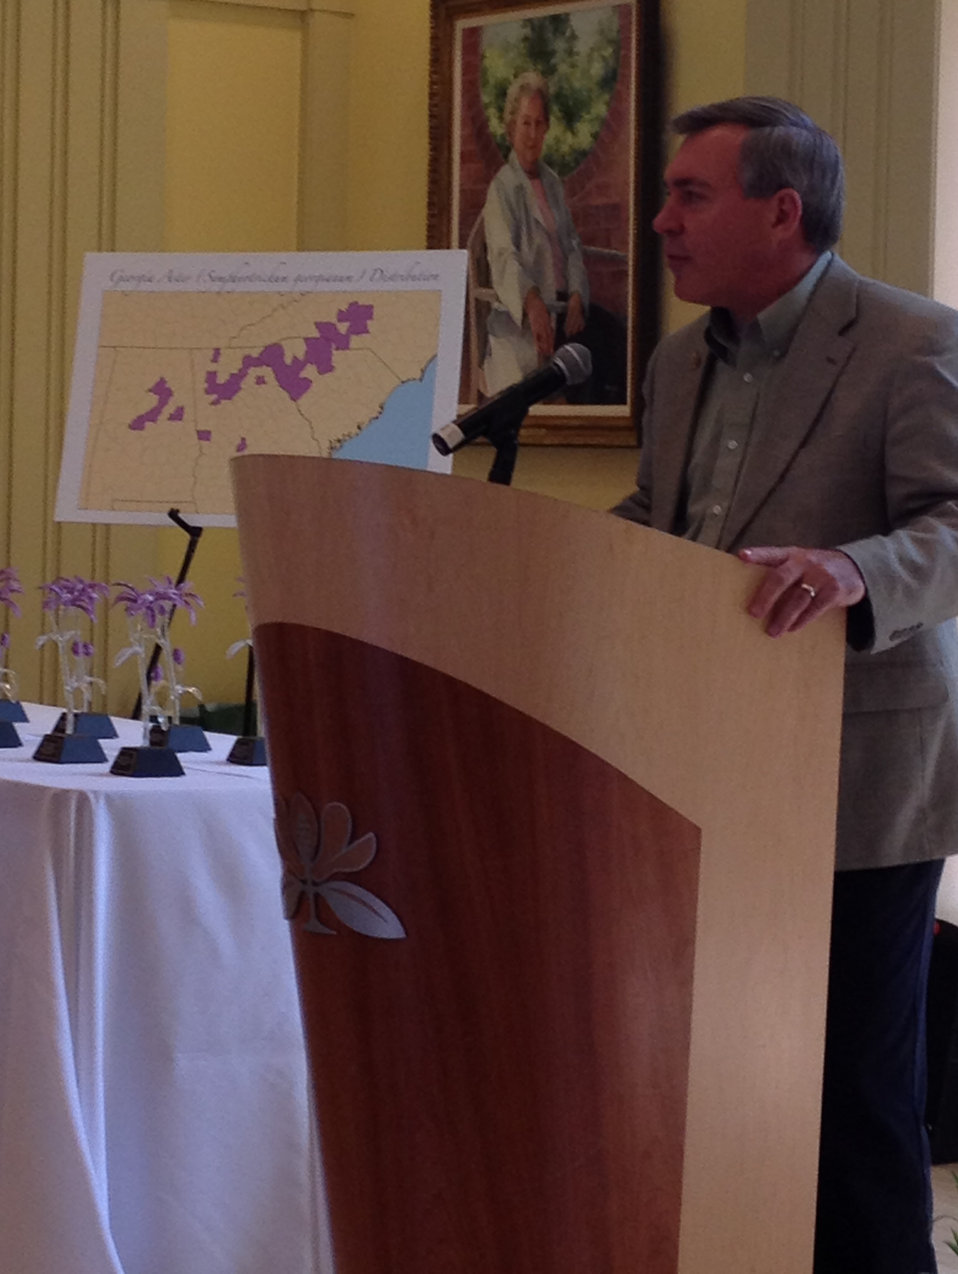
Georgia Department of Natural Resources's Dan Forster gives remarks

Georgia aster is an uncommon Southern plant that declined for decades, to the verge of receiving federal protection. However, nine organizations, private and public, are committing to conserve the plant in an effort that should keep it off the endangered species list. The commitment will be memorialized this Friday in an agreement called a Candidate Conservation Agreement, designed to proactively conserve plants and animals before they need Federal protection.

The Candidate Conservation Agreement was signed on Friday, May 16 at the Atlanta Botanical Gardens.